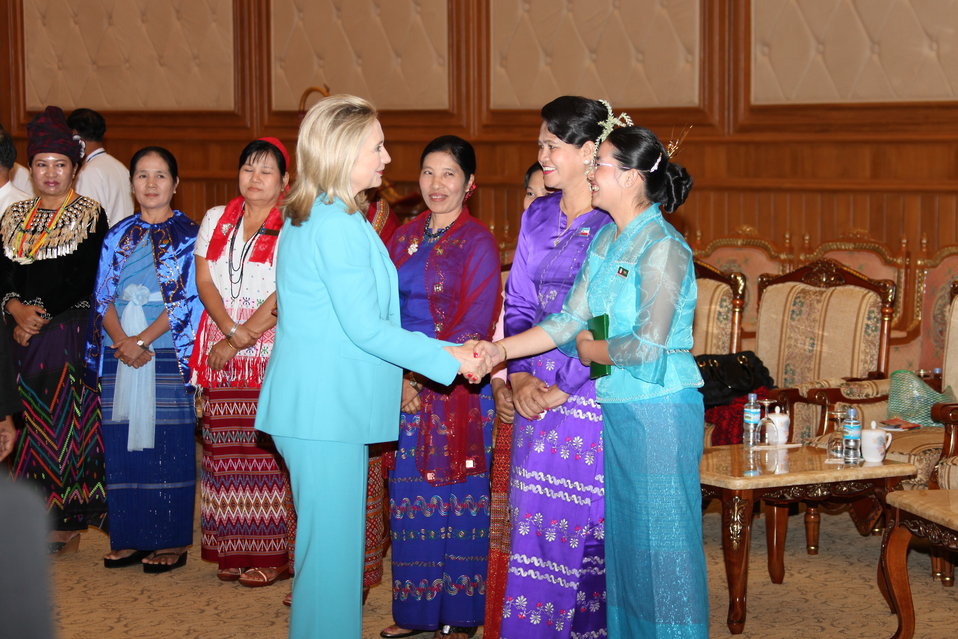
Secretary Clinton Meets With Members of the Lower House of Parliament

U.S. Secretary of State Hillary Rodham Clinton meets with members of the Lower House of Parliament at the Burmese Parliament in Nay Pyi Taw, Burma, on December 1, 2011.